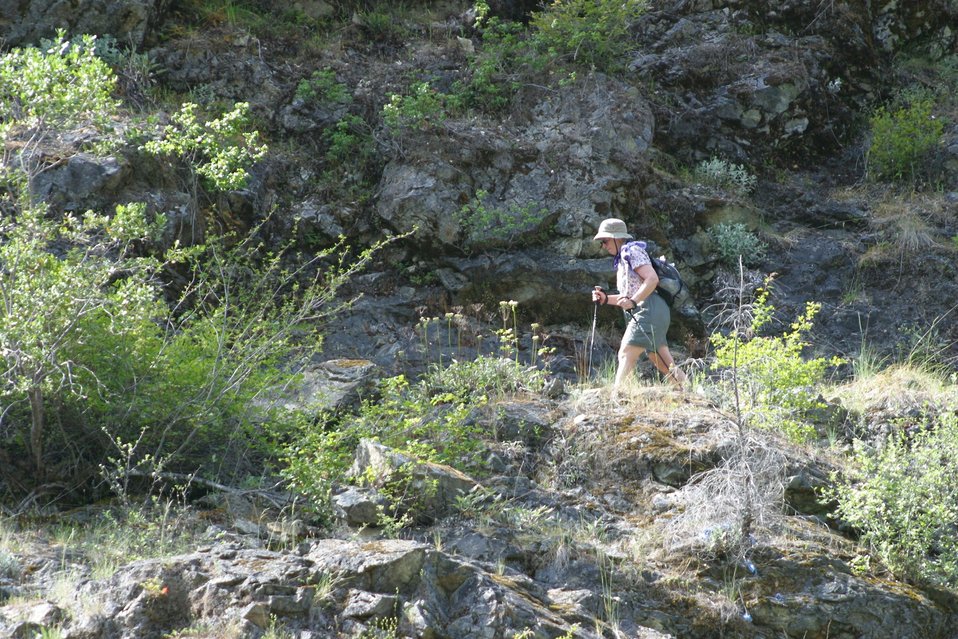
Wild section of the Rogue River from Grave Creek to Foster Bar May 19 to May 22.